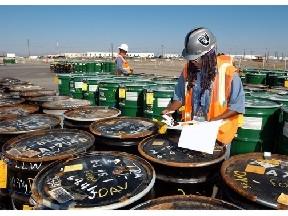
Hanford Site waste drum removal

Retrieval of buried waste from low-level burial grounds, most of it in 55-gallon drums, at the Hanford Site's Central Plateau near Richland, WA. About half of the waste is transuranic (TRU) and the rest is low-level and mixed low-level waste.